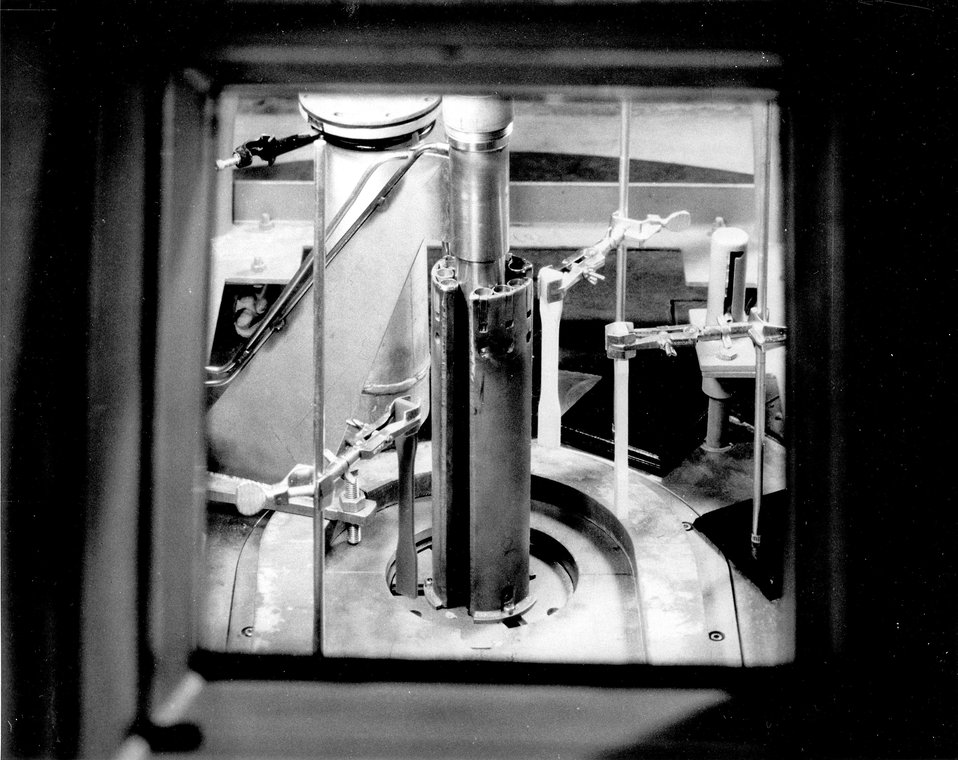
Effects of radiation in organic substances...Red, white, and yellow tensile specimens of organic plastics being irradiated by 19,000 curies of cobalt-60. c. 1967